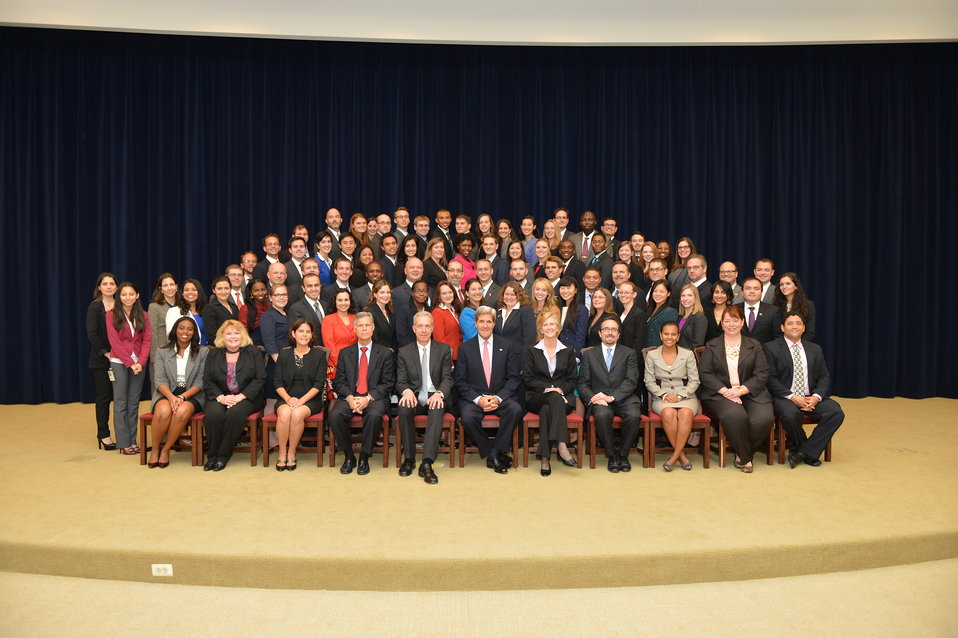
Secretary Kerry Poses for a Photo With the 174th Foreign Service Generalist Orientation Class

U.S. Secretary of State John Kerry hosts a joint swearing-in ceremony for the 174th Foreign Service Generalist Orientation Class and the Presidential Management Fellow Orientation Class at the U.S. Department of State in Washington, D.C., on October 18, 2013.